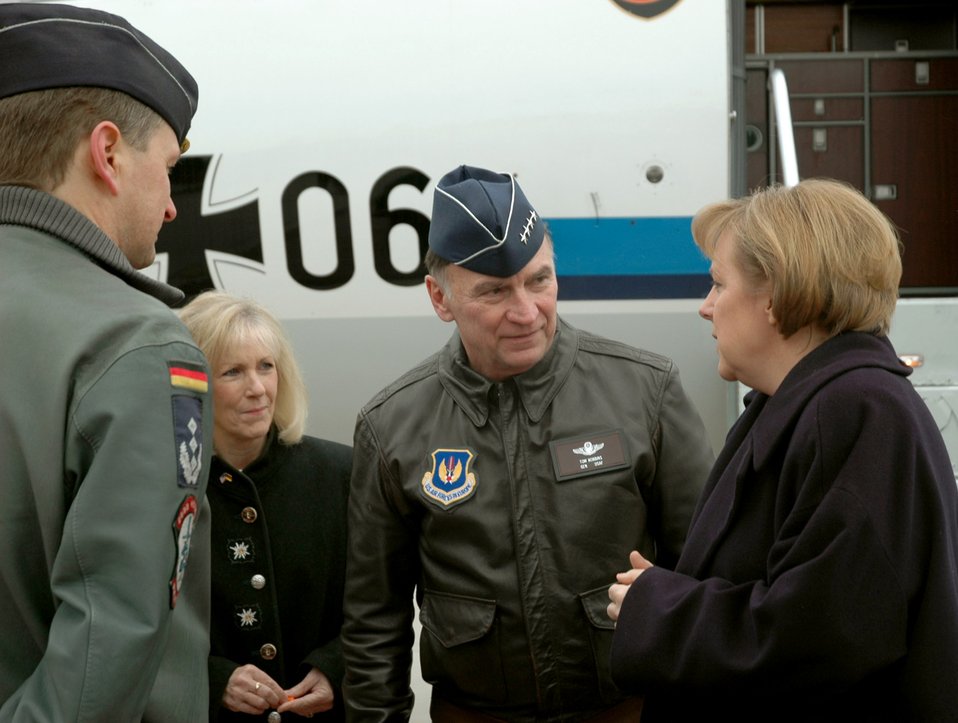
Alliance focus

RAMSTEIN AIR BASE, Germany (AFPN) -- Gen. Tom Hobbins, U.S. Air Forces in Europe commander, and his wife, Robbin, and Col. Helmar Storm, Allied Air Component Command Ramstein executive officer, meet German Chancellor Angela Merkel as she transits through the base Feb. 23.